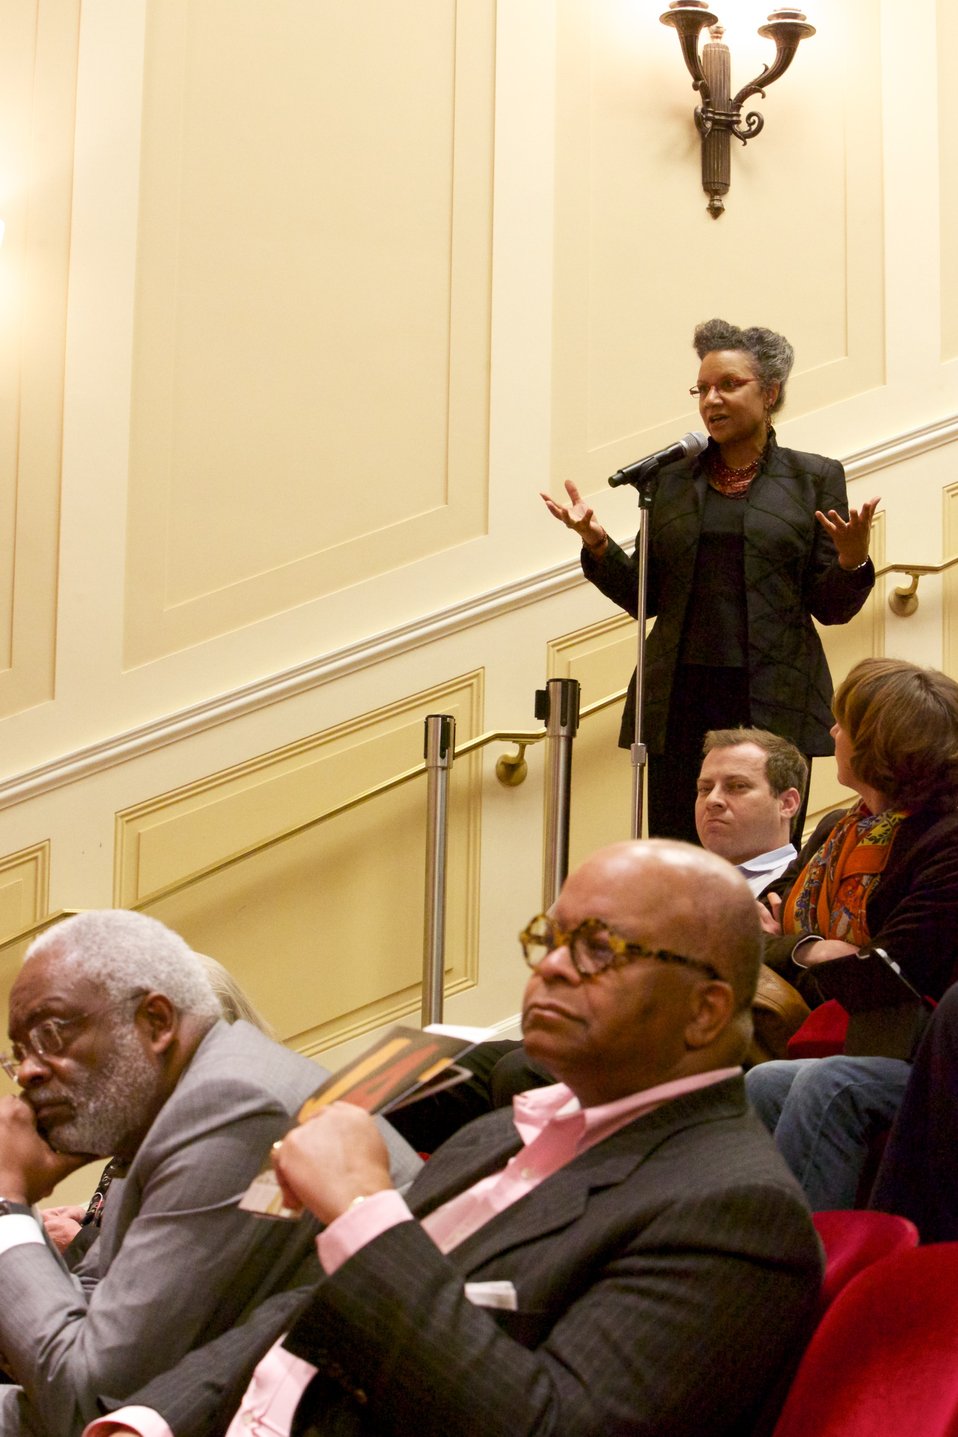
Jazz Diplomacy: Sending America's Music to the World